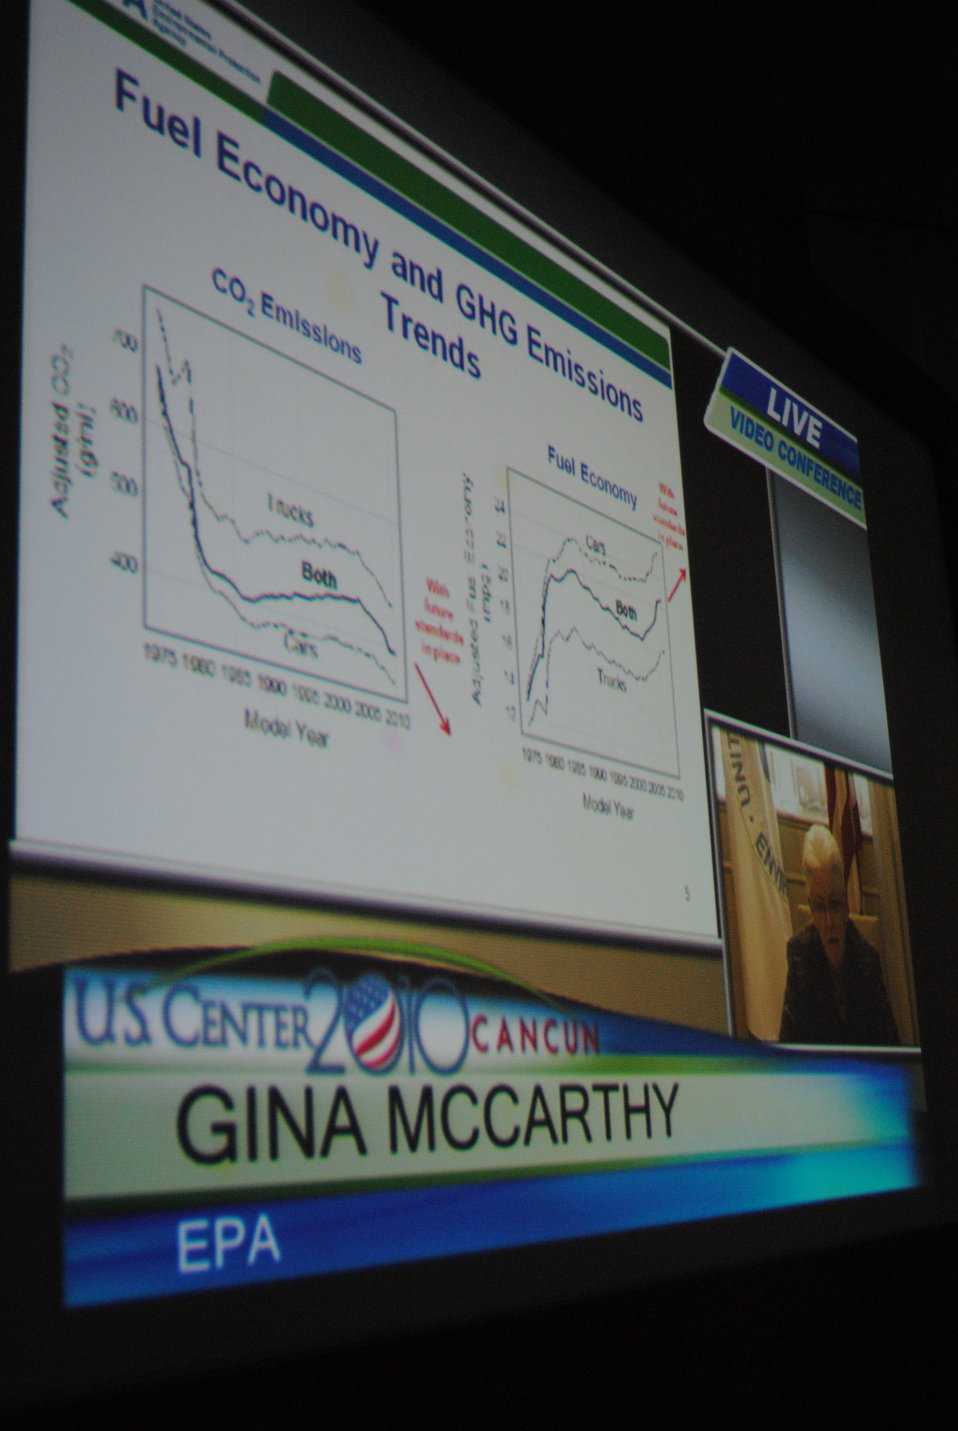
Gina McCarthy of the EPA addresses the U.S. Center at COP-16 in Cancun, Mexico, on December 7, 2010.